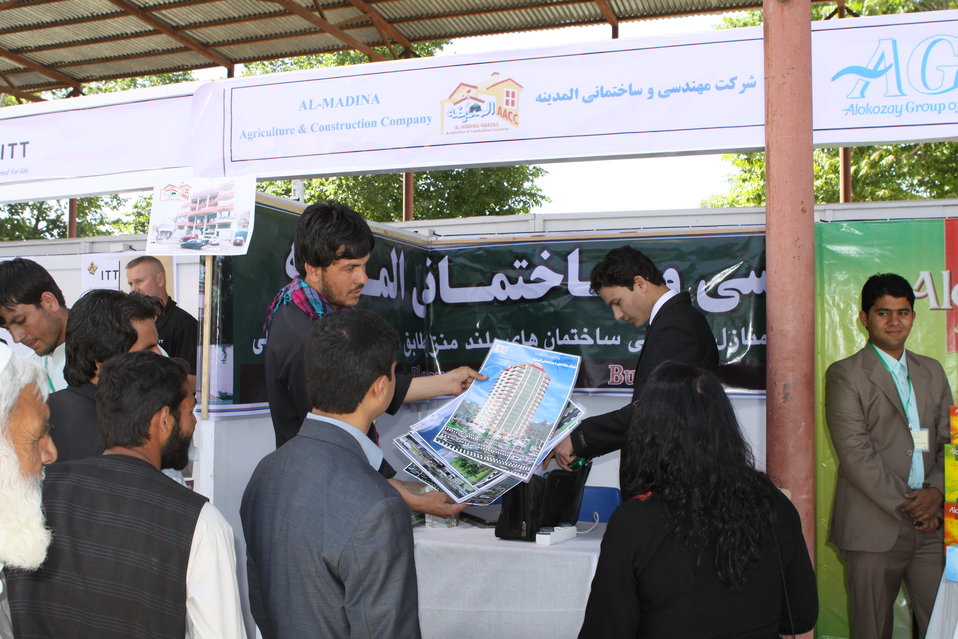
100522 ATVI Graduation 012